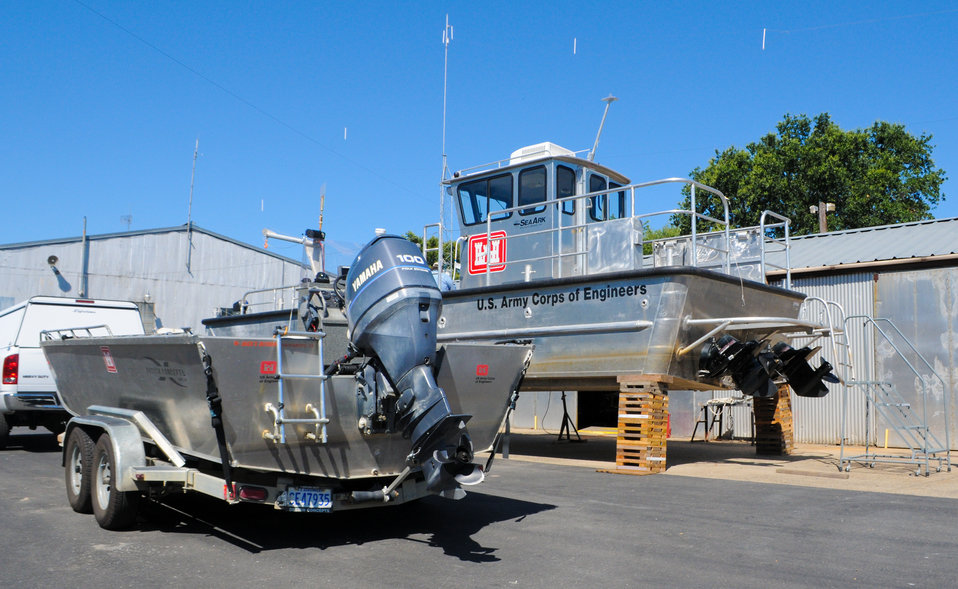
Bryte Yard boats

A new utility boat (right) at the Sacramento District’s Bryte Yard maintenance facility in West Sacramento, Calif., shown July 19, 2011, makes navigation work on the Sacramento River safer, faster and cheaper than it was with the yard’s smaller, older boat (left). The new boat was reassigned from the Corps’ nearby Englebright Lake in early July.